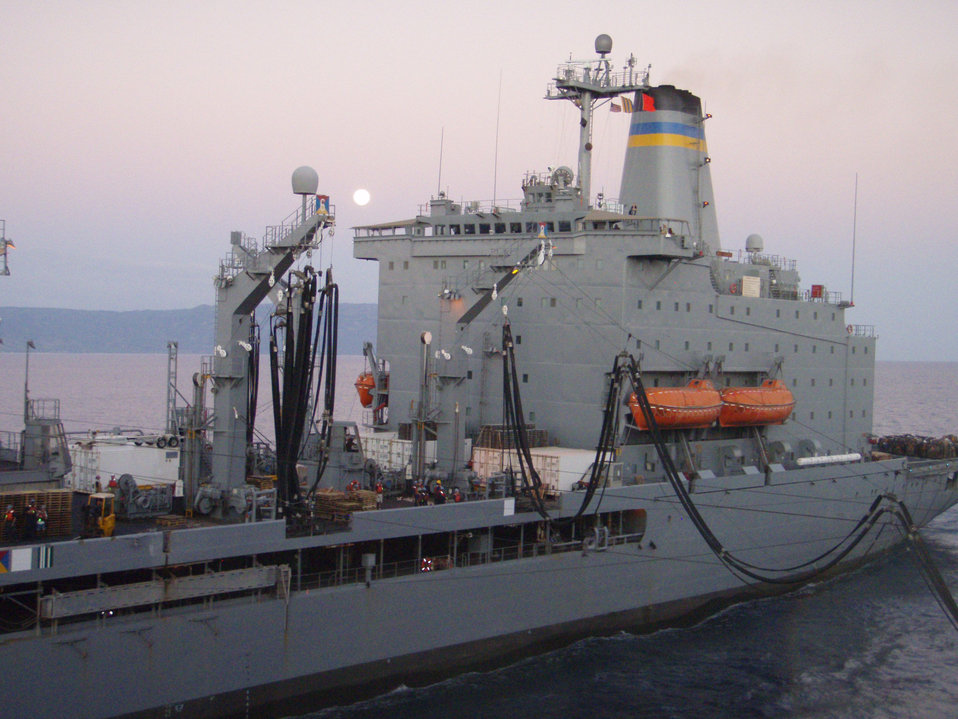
Photographed by U.S. Public Health Service (USPHS) Lt. Cmdr. Gary Brunette this was a slightly closer view of PHIL 14985, depicting what was a supply ship, which had pulled alongside the aircraft carrier, USS Bataan, during Caribbean Operation Unified Response. Cmdr. Brunette and his fellow USPHS corpsmen had been transported to the USS Bataan during this deployment.